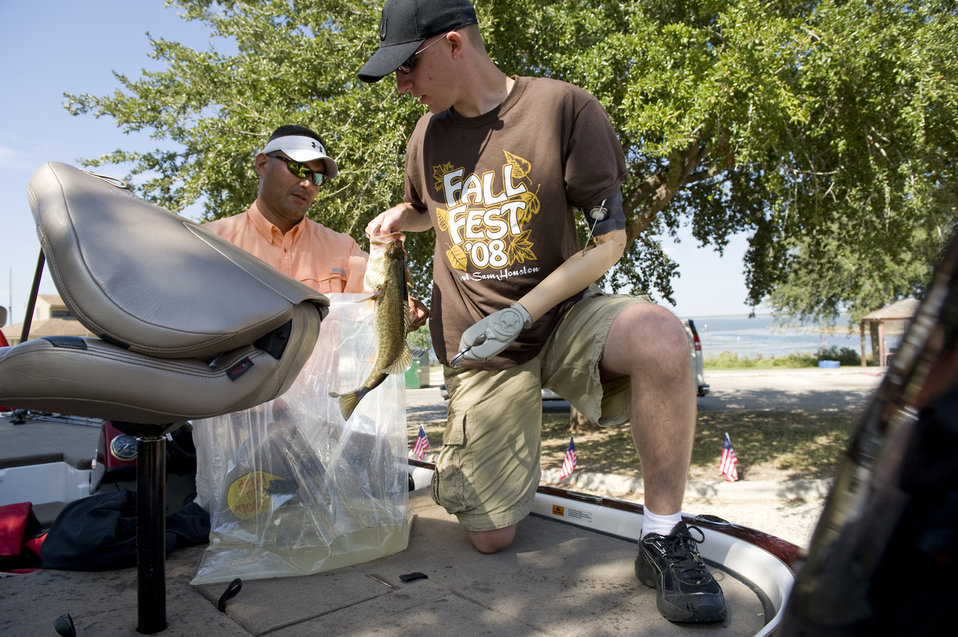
Warrior Care: Injured servicemembers go fishing

Senior Airman Marcus Creason (right) removes his largest bass of the day from the live well for weighing during Fishing for Freedom V held Oct. 25 at Choke Canyon, Texas. Airman Creason and his fishing partner Tech. Sgt Chuck Bunch (left) finished the competition with their largest fish weighing 3 pounds, 1 ounce. Thirty-three injured servicemembers participated in the event.